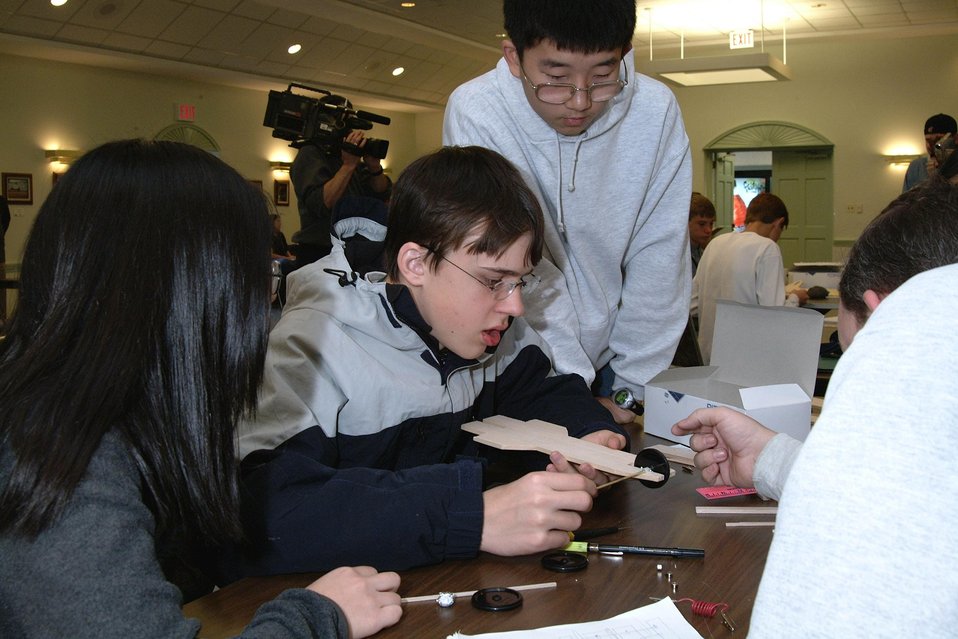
TEAM MEMBERS FROM SAMFORD MIDDLE SCHOOL, AUBURN, AL BUILDING A MODEL SOLAR CAR.

THE DEPARTMENT OF ENERGY SPONSORED THE FIRST NATIONAL MIDDLE SCHOOL SCIENCE BOWL ON MARCH 21-24, 2002 IN WASHINGTON, DC AT DOE HEADQUARTERS FORRESTAL BUILDING. ON MARCH 23RD THE COMPETITION INCLUDED A MODEL SOLAR CAR RACE HELD AT THE NATIONAL 4-H CONFERENCE CENTER, CHEVY CHASE, MD. THE MODEL CARS WERE DESIGNED AND CONSTRUCTED BY THE TEAM MEMBERS.